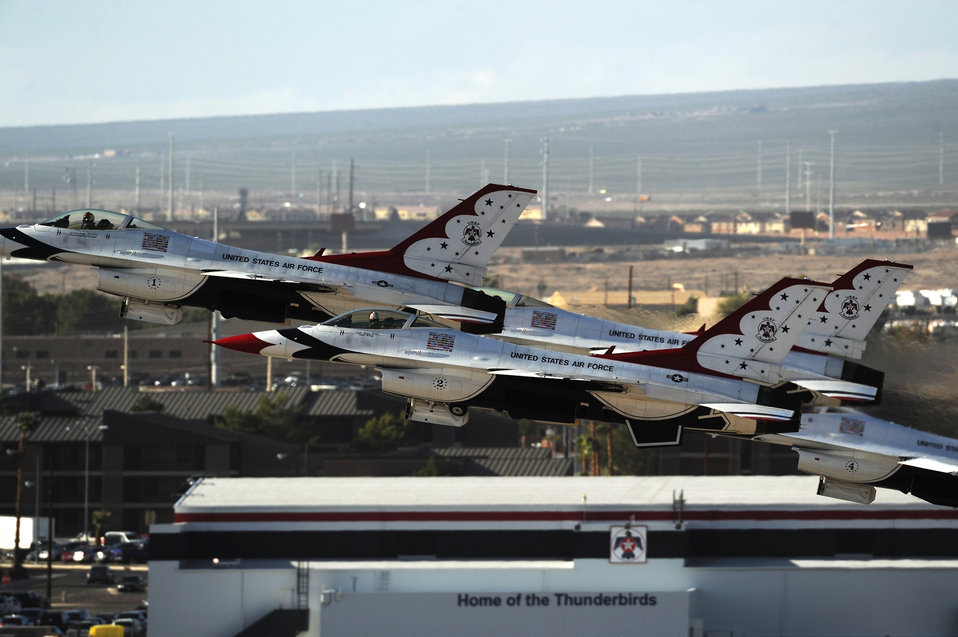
Take off

The U.S. Air Force Air Demonstration Squadron